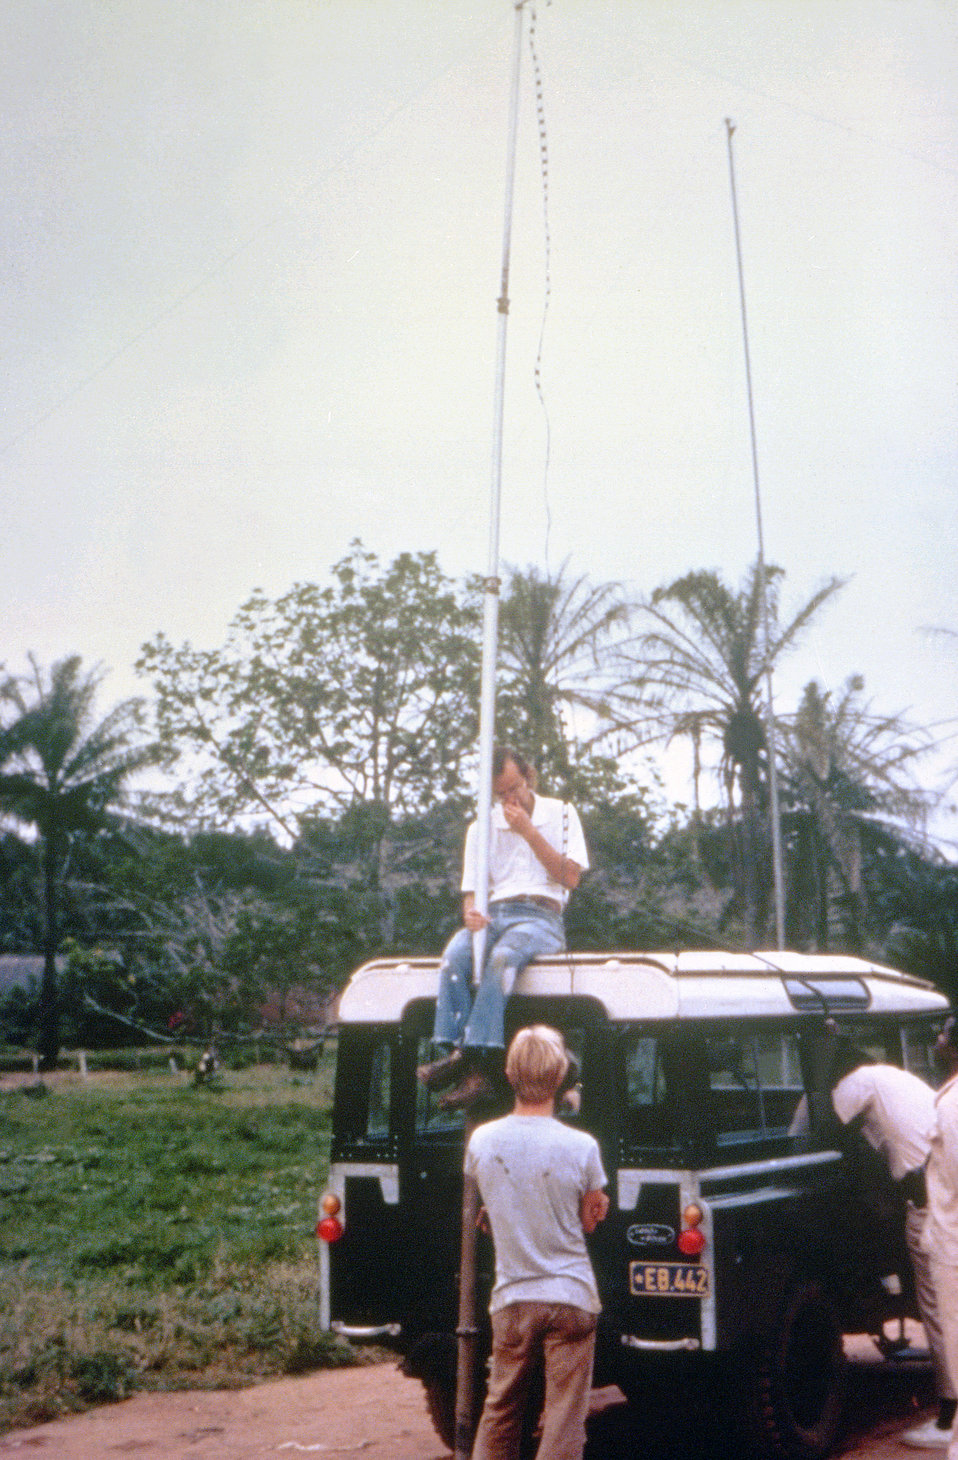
This photograph showed Del Conn (seated on truck), and others adjusting equipment in an effort to establish short wave radio contact between the towns of Yambuku and Kinshasa, Zaire, now known as the Democratic Republic of Congo.